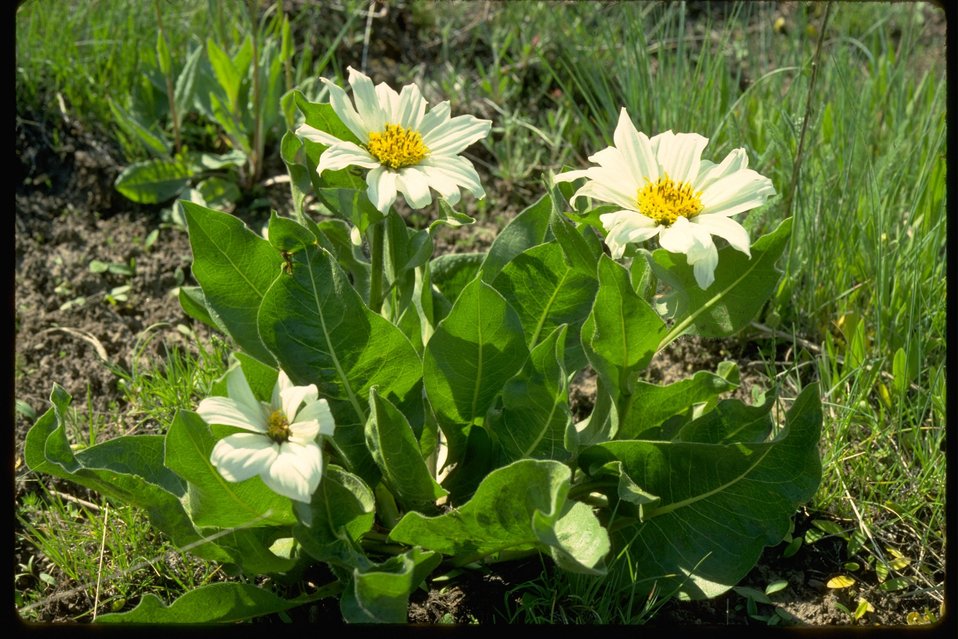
Wyethia Helianthoides